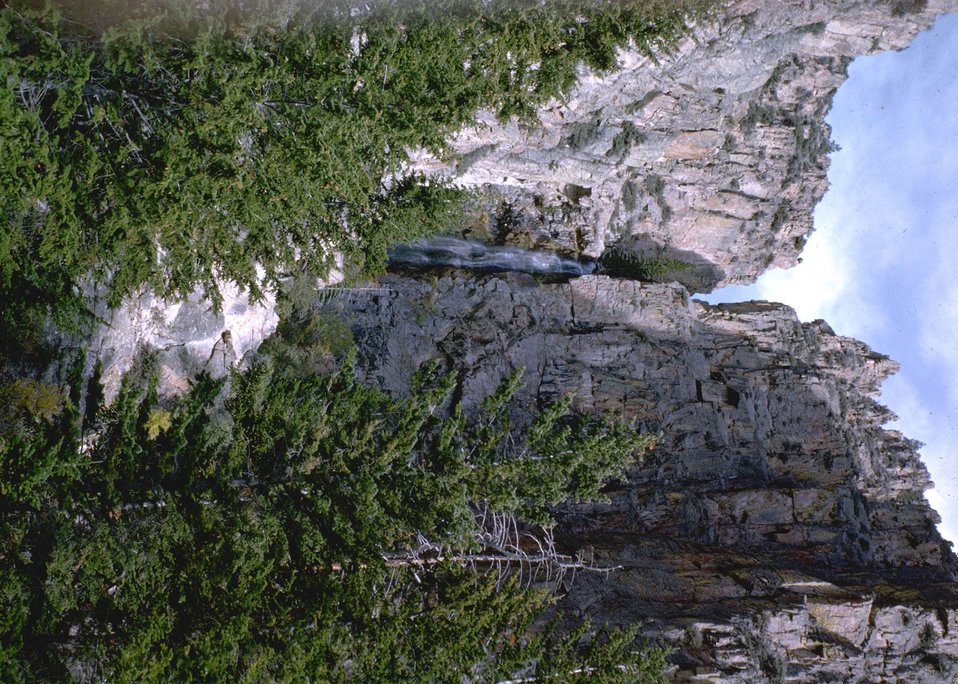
Scenic view of waterfall.